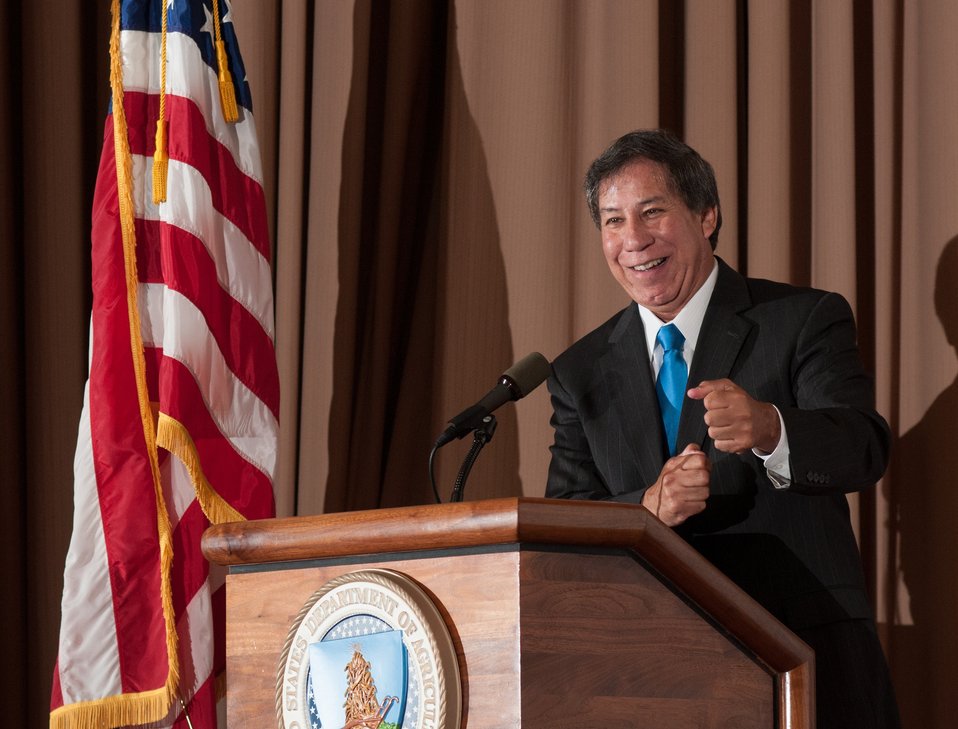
U.S. Department of Agriculture (USDA) Under Secretary for Marketing and Regulatory Programs Ed Avalos speaks during the USDA Asian Pacific American Heritage Month Observance, at the USDA headquarters in Washington, D.C., on Thursday, May 23, 2013. This year’s theme is “Building leadership; Embracing the Cultural Values and Inclusions.”